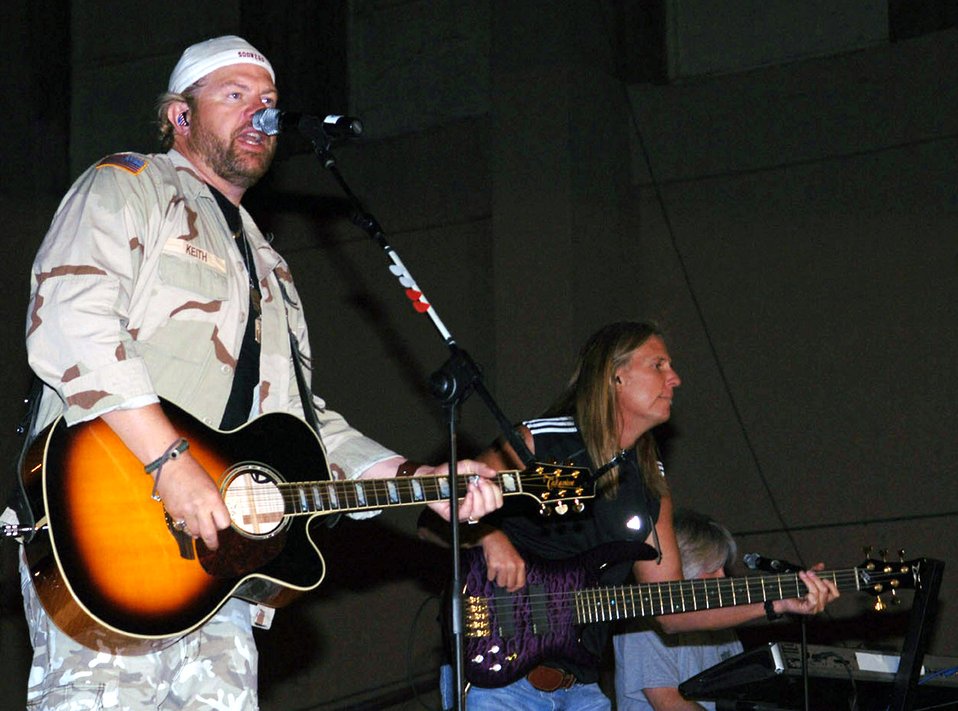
American country star plays in Afghanistan

More than 1,500 Airmen, Marines, Soldiers and Sailors turned out to hear country singer Toby Keith perform May 18 at the Craig Joint Theater Hospital's Medevac hangar at Bagram Air Base, Afghanistan. Mr. Keith has been touring bases since the beginning of Operation Enduring Freedom. The 455th Air Expeditionary Wing, headquartered at Bagram AB, is comprised of about 2,500 Airmen, based throughout Afghanistan combating terrorism and helping build a better future for Afghans.